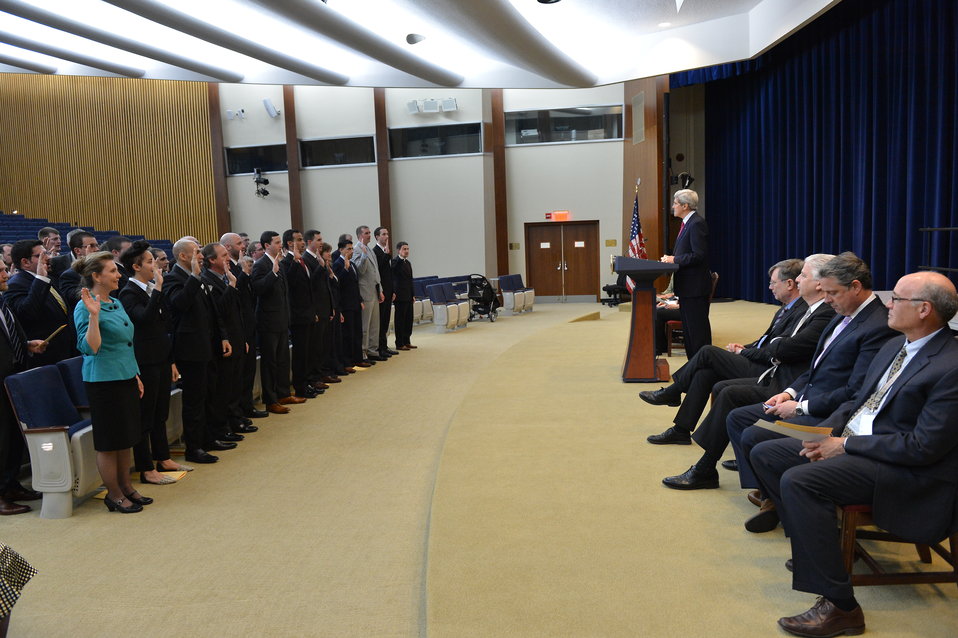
Secretary Kerry Swears in the 133rd Foreign Service Specialist Class

U.S. Secretary of State John Kerry swears in the 133rd Foreign Service Specialist class at the U.S. Department of State in Washington, DC on April 11, 2014.